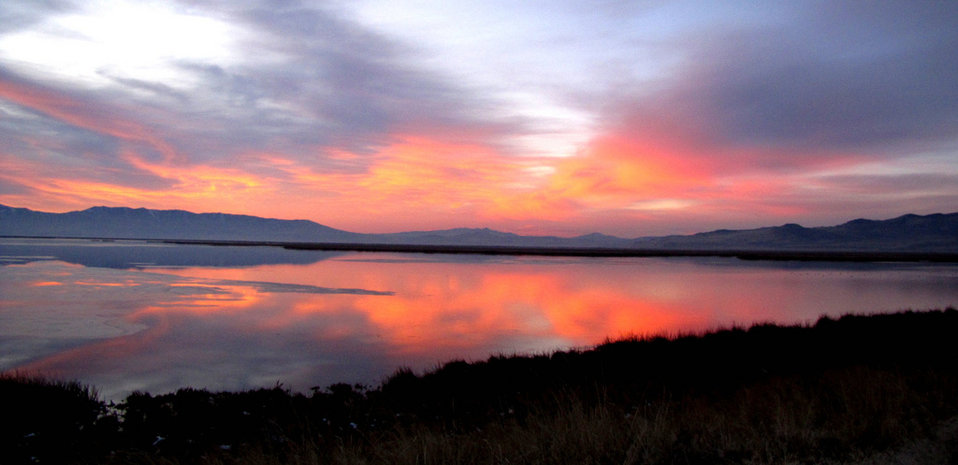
Bear River sunset

Bear River Migratory Bird Refuge, OR
Photo: Bryant Olsen, Creative Commons
Created in 1928, Bear River Refuge set aside bird habitat in the nation's interior, an early recognition of the importance of conserving non-coastal wetlands as wildlife oases.